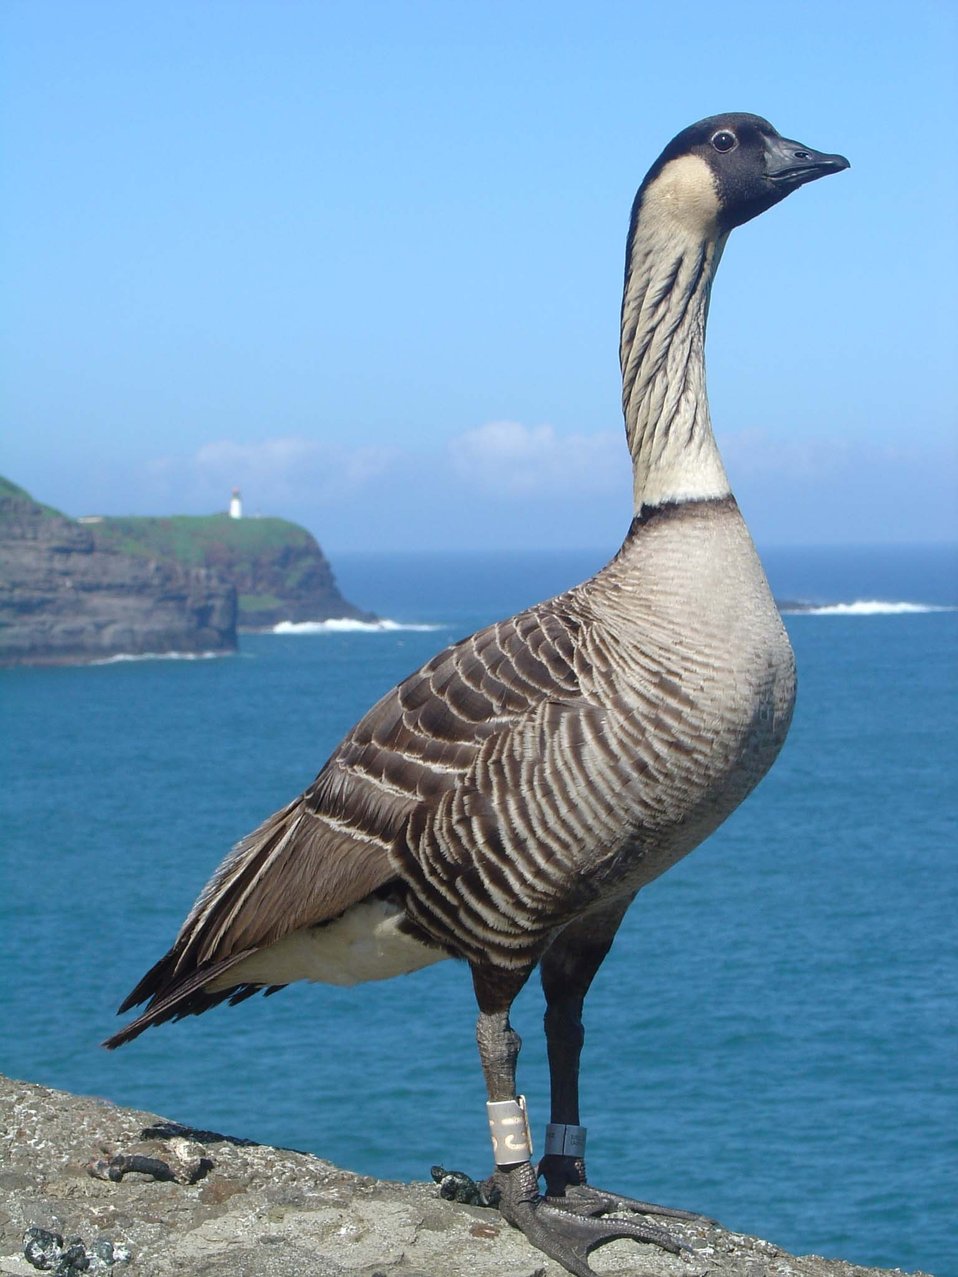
Kilauea Point and nene

Lucky visitors to Kilauea Point National Wildlife Refuge in Hawaii may catch a glimpse of the endangered nene, the state bird also known as the Hawaiian goose.